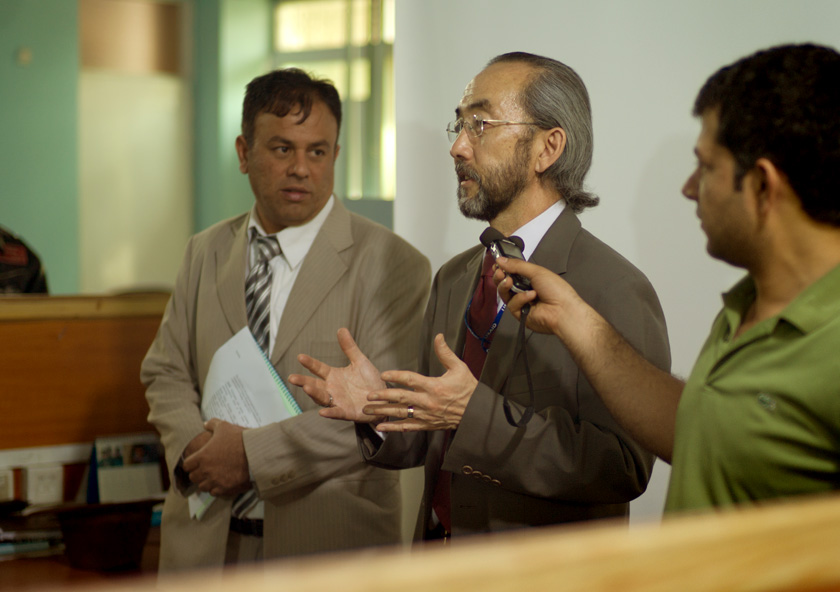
L1002723Refrigerator